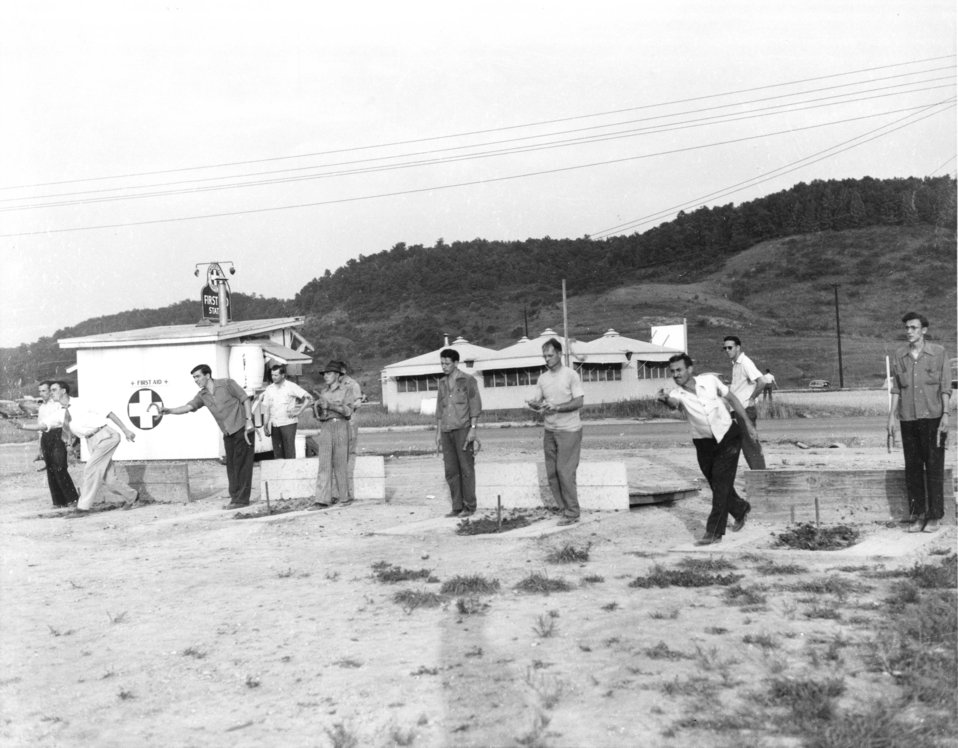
Recreation at Oak Ridge